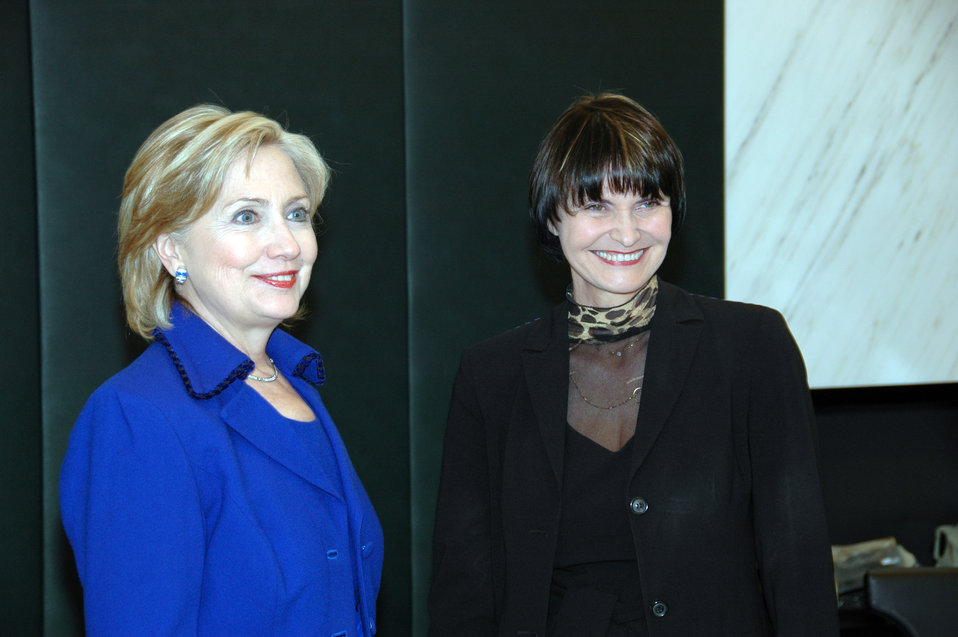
Secretary Clinton Meets Swiss Foreign Minister

U.S. Secretary of State Hillary Rodham Clinton with Swiss Foreign Minister Micheline Calmy-Rey in Zurich, Switzerland October 9, 2009.